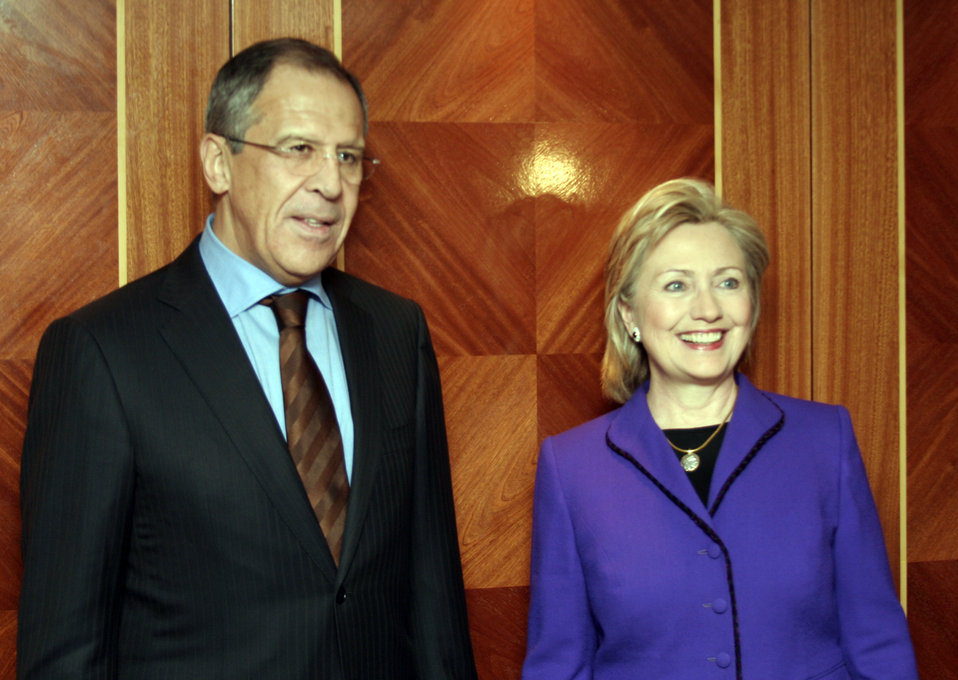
Secretary Clinton Meets With Russian Foreign Minister

U.S. Secretary of State Hillary Rodham Clinton meets with Russian Foreign Minister Sergey Lavrov in London, U.K. January 27, 2010.